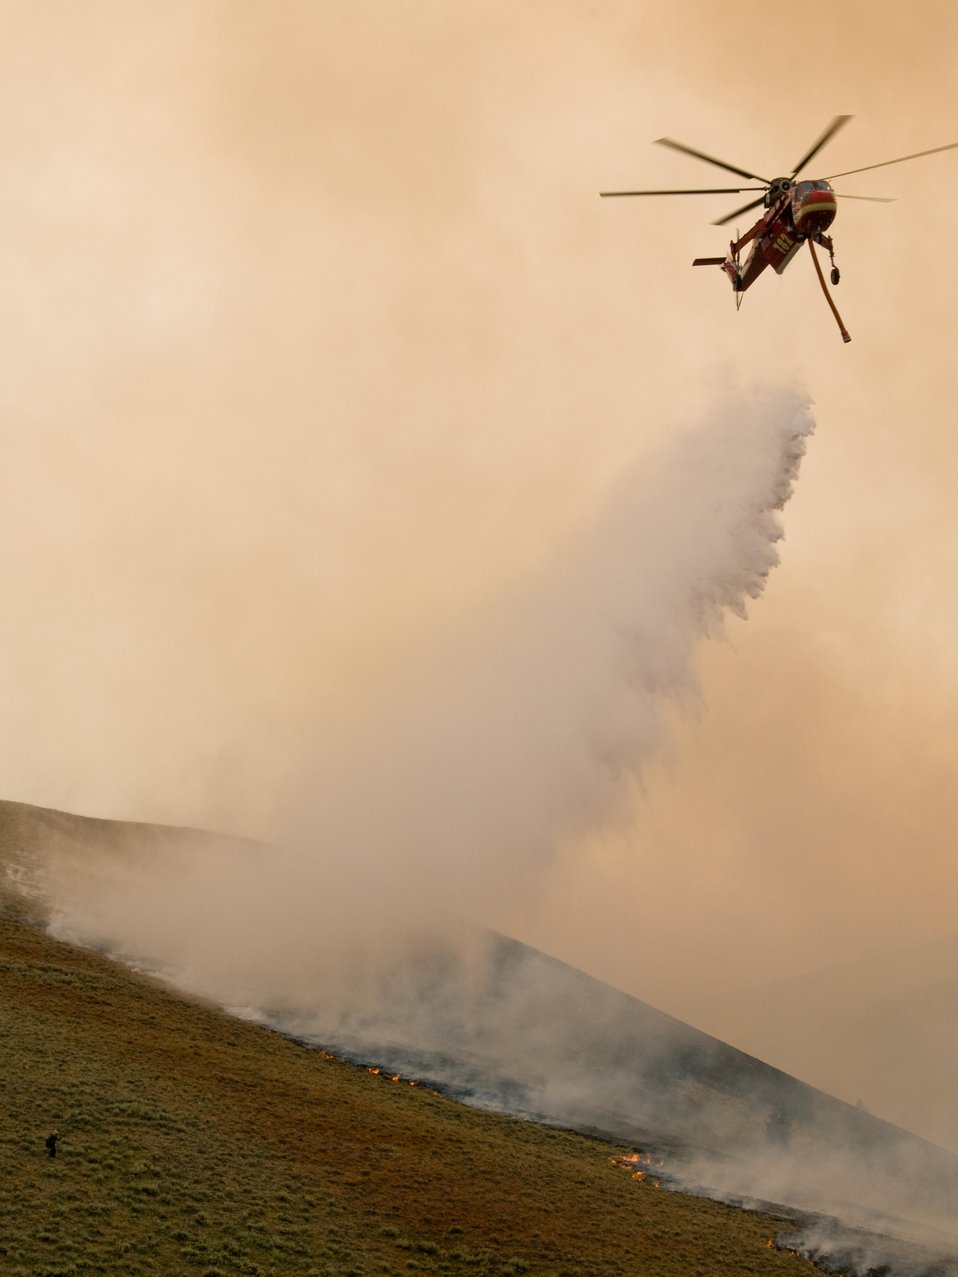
Helicopter makes water drop on the Lodgepole Fire. The Lodgepole Fire in the Salmon-Challis National Forest near Challis, ID began on Jul. 20, 2013 by lightning has consumed approximately 13,700 acres and is approximately 15% contained.